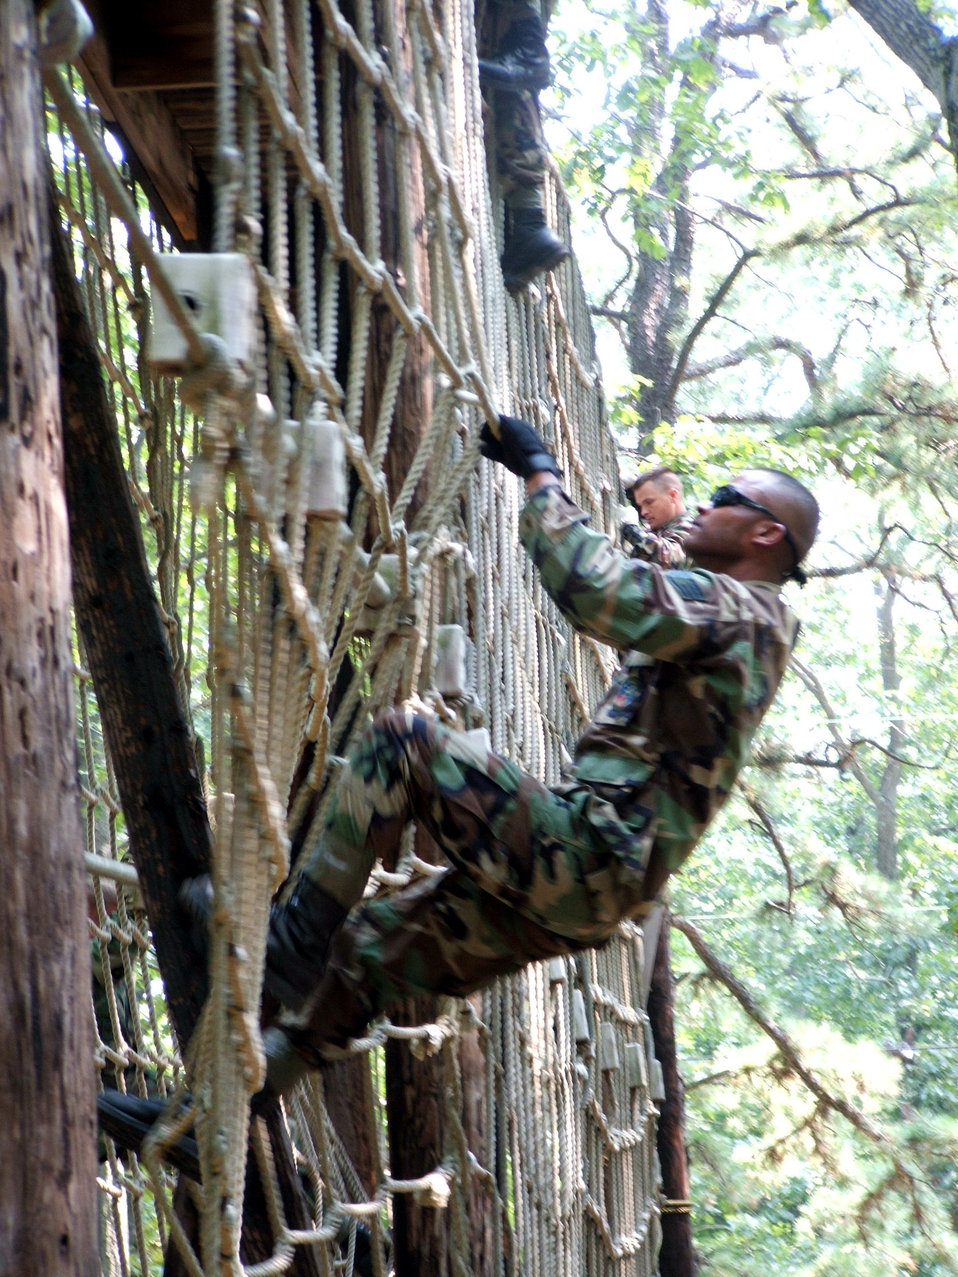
'Deployed' to New Jersey

FORT DIX, N.J. -- Staff Sgt. Sy Pinthong climbs a cargo net on the obstacle course during contingency skills training here. Sergeant Pinthong, along with more than 50 other Airmen, completed the weeklong training course in preparation for deployment. He is a combat camera craftsman from Charleston Air Force Base, S.C.